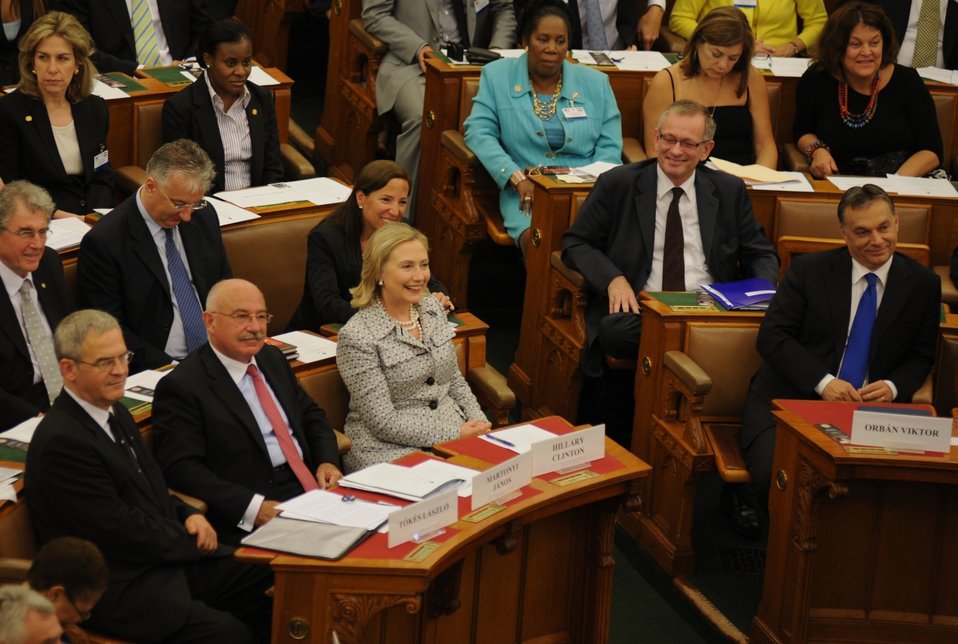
Secretary Clinton Listens During the Inauguration of the Tom Lantos Institute

U.S. Secretary of State Hillary Rodham Clinton sits back and listens during the inauguration of the Tom Lantos Institute in Budapest, Hungary, June 30, 2011.